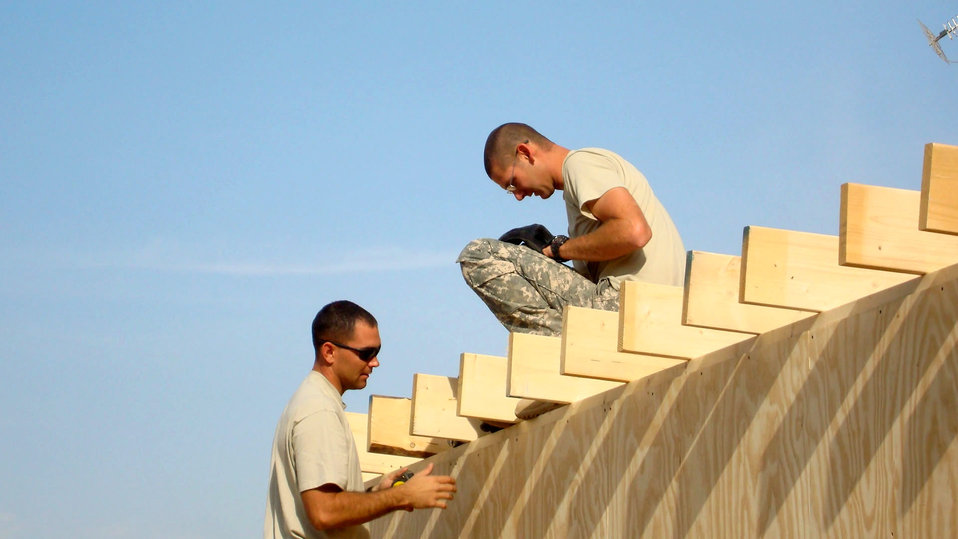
Balad Airmen help improve quality of life for Soldiers in Iraq

Staff Sgt. Michael Shaffer (left) Airman 1st Class Bradley Hambleton measure the distance between two rafters before completing the roof of a housing unit Jan. 11 at Patrol Base Olson, Iraq. Airman Hambleton is deployed from Kadena Air Base, Japan, and Sergeant Shaffer is deployed from Beale Air Force Base, Calif. Both are 732nd Expeditionary Civil Engineer Squadron Det. 6 structural technicians.